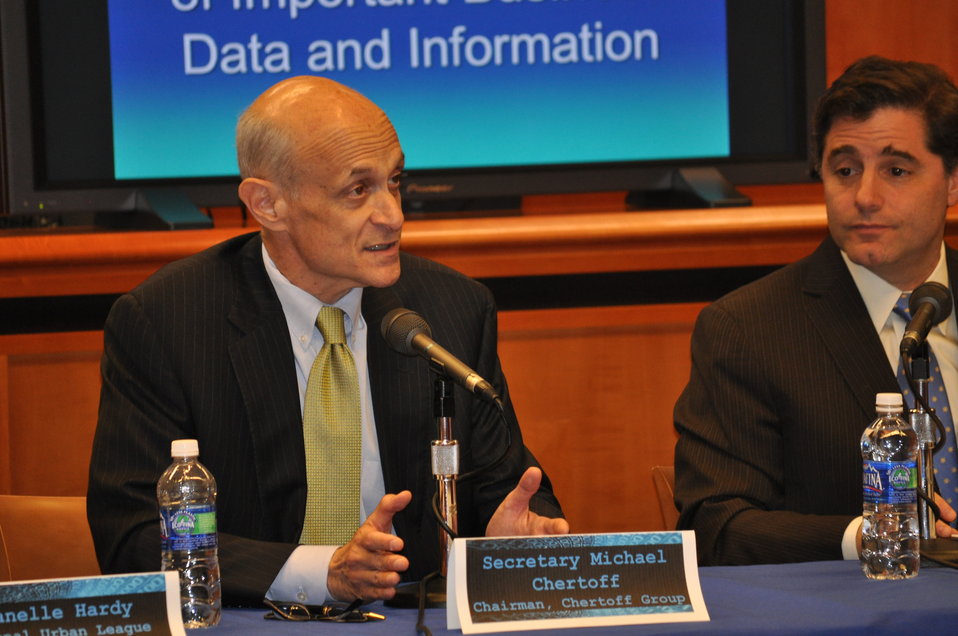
Cybersecurity 5-16

Cybersecurity for Small Business Roundtable; May 16, 2011